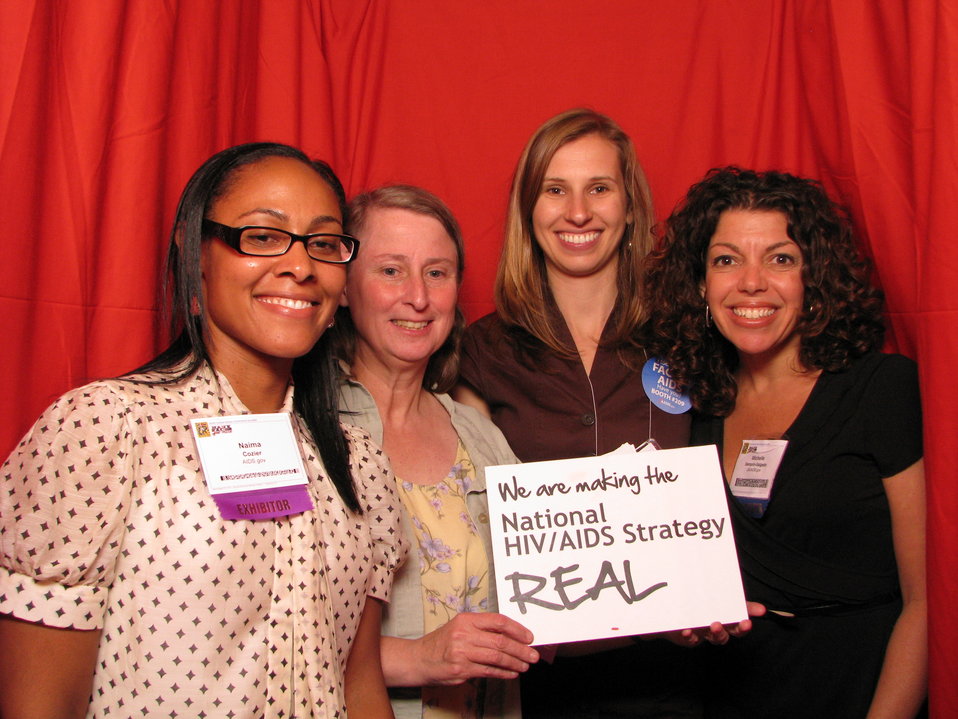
We are Making the National HIV/AIDS Strategy REAL

From the AIDS.gov photo booth at the U.S. Conference on AIDS, September 2010 (Orlando, FL).